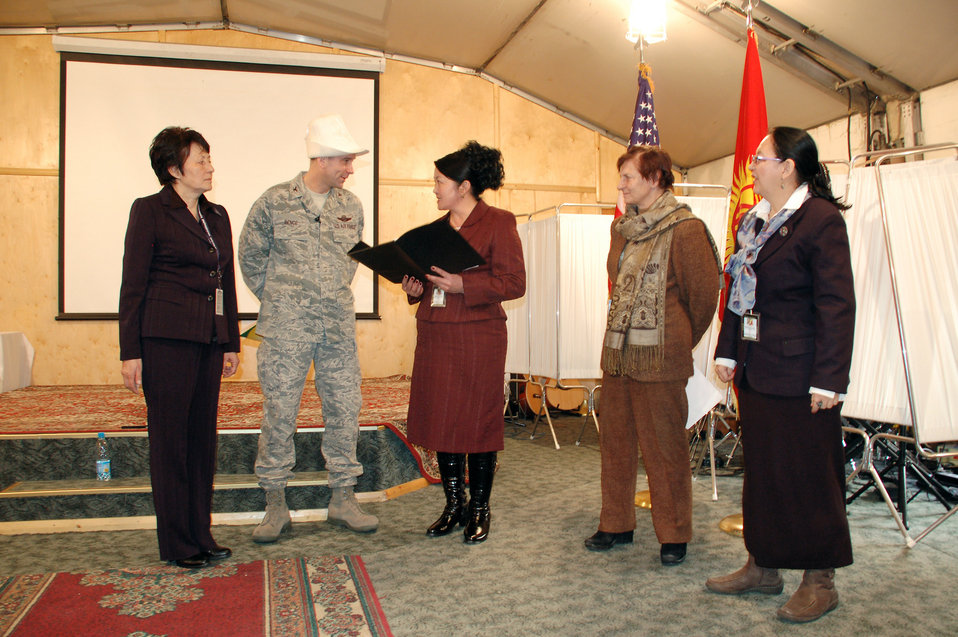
Manas Airmen host Kyrgyz Congress of Women

Members of the Kyrgyzstan Congress of Women present Col. Christopher Bence with a gift and a traditional Kyrgyz kalpak hat during a Jan. 8 tour of Manas Air Base, Kyrgyzstan. The group, which consisted of female civic and business leaders from throughout Kyrgyzstan, visited the base to meet with Airmen and to learn more about the mission and the contributions of women who serve there. Colonel Bence is the 376th Air Expeditionary Wing commander.